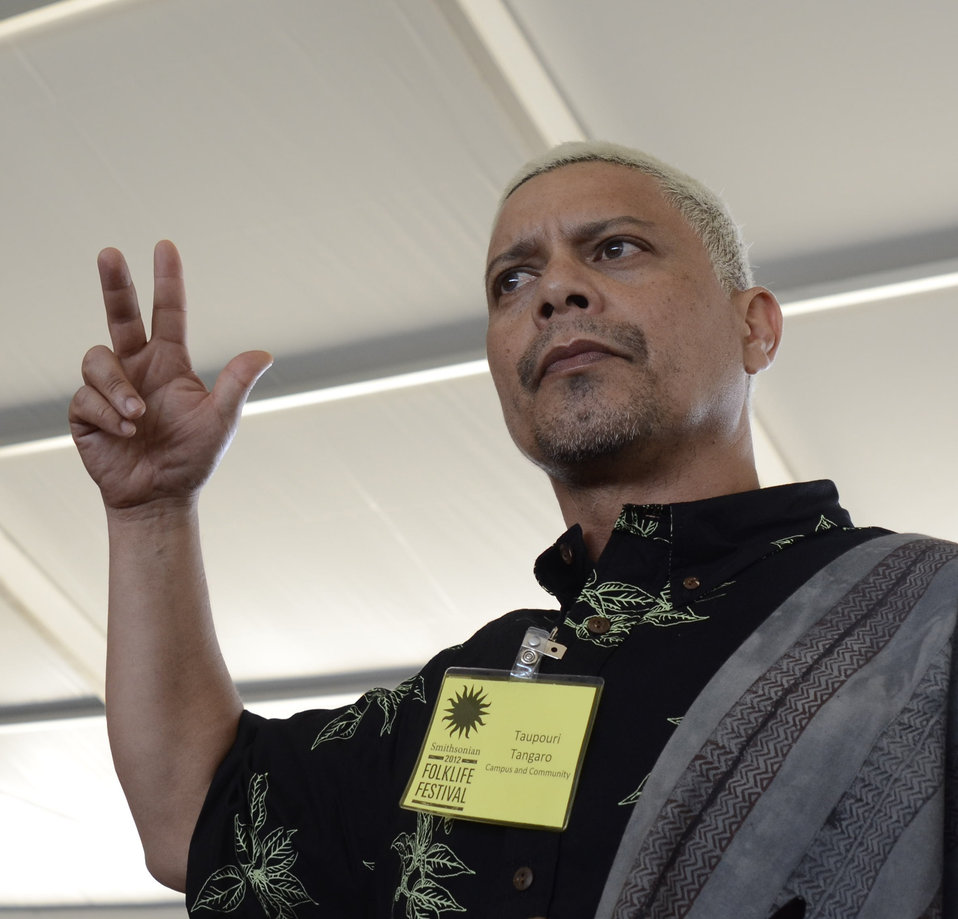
University of Hawaii's Tuahine Troupe member Taupouri Tangaro performs at the opening ceremony for the 2012 Smithsonian Folklife Festival in Washington, D.C. on Wednesday, June 27, 2012. This year’s festival features three themes; “Creativity and Crisis” celebrates the 25th anniversary of the AIDS Memorial Quilt, “Citified,” explores the rich culture and community of neighborhoods east of the Anacostia, and the third “Campus and Community” celebrates 150 years of USDA and the Land-Grant university system.